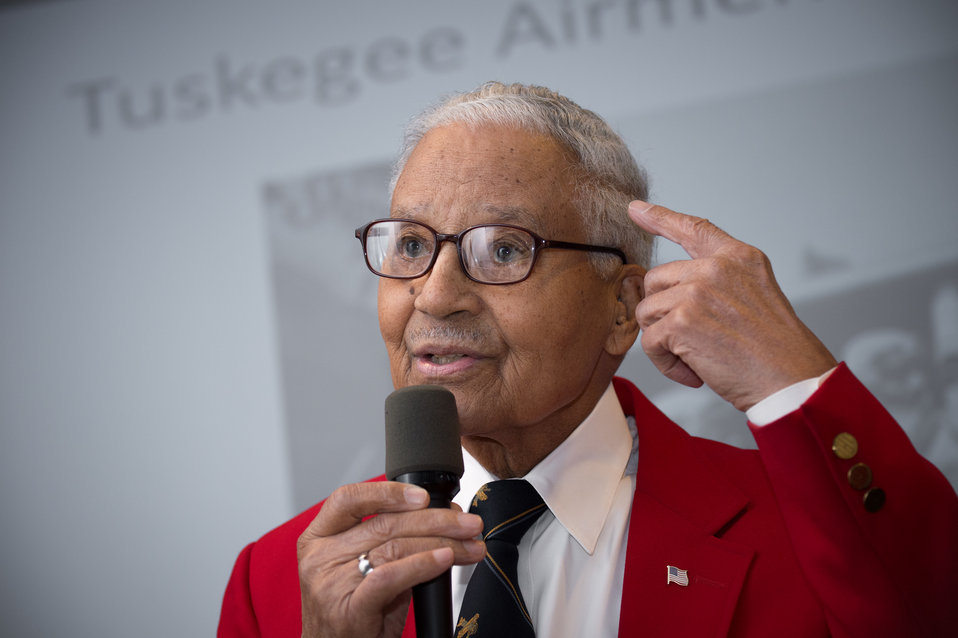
Pilot and Tuskegee Airman, Colonel Charles Edward McGee, U.S. Air Force (USAF) ret. speaks at the U.S. Department of Agriculture's (USDA), Office of the Assistant Secretary for Civil Rights (OASCR) program “In conversation With Tuskegee Airmen” at USDA in Washington, D.C. on Thursday, Mar. 27, 2014. Col. McGee recalled his experiences in the Army Air Corp, Army Air Force and Air Force. Questions from the audience provided several opportunities for discussion about civil rights challenges and how they achieved success and respect.